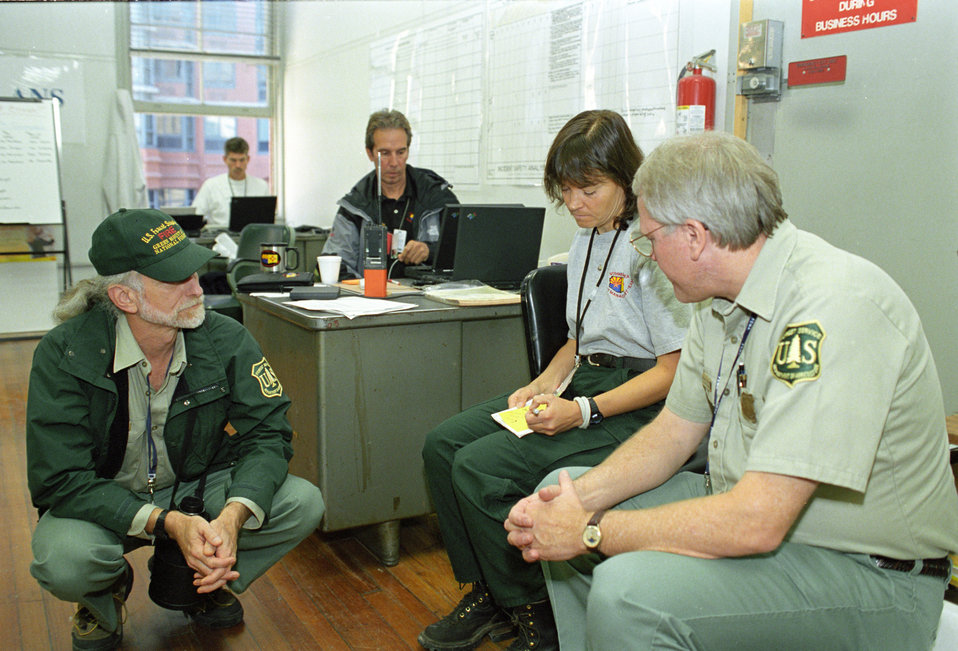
September 11, 2001 terrorists attacked the World Trade Center in New York City, NY, the Pentagon in Arlington, VA., and a field in rural Pennsylvania. After the attacks the U.S. Department of Agriculture (USDA) Forest Service (FS) Incident Management Teams restored communications and provided initial incident command of the World Trade Center and Pentagon Crash sites on September 26, 2001.